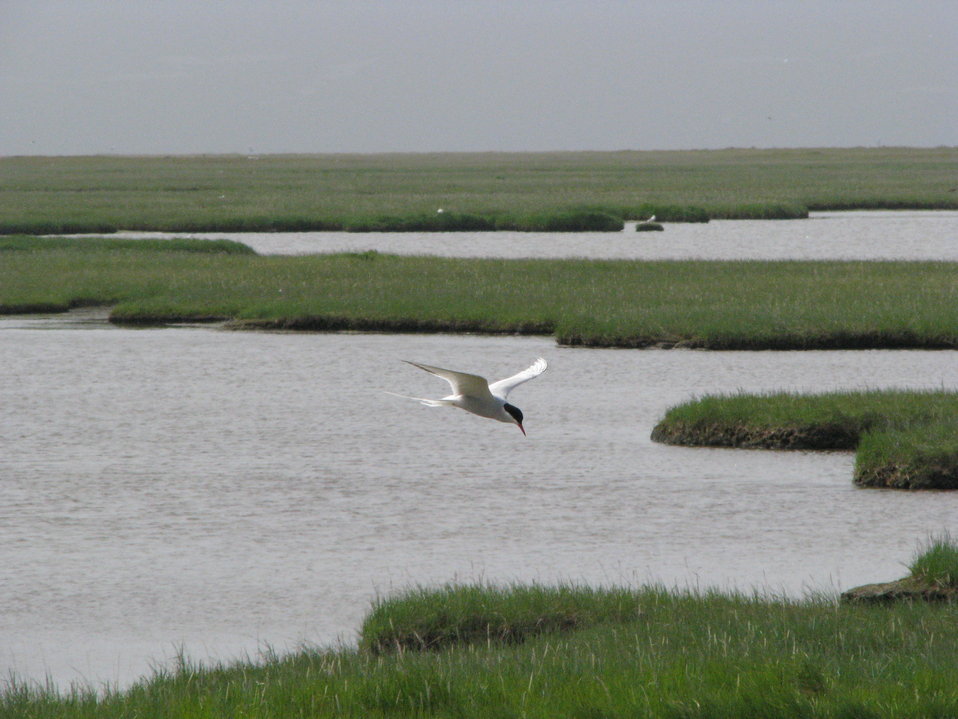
Hovering Arctic Tern

Yukon Delta NWR